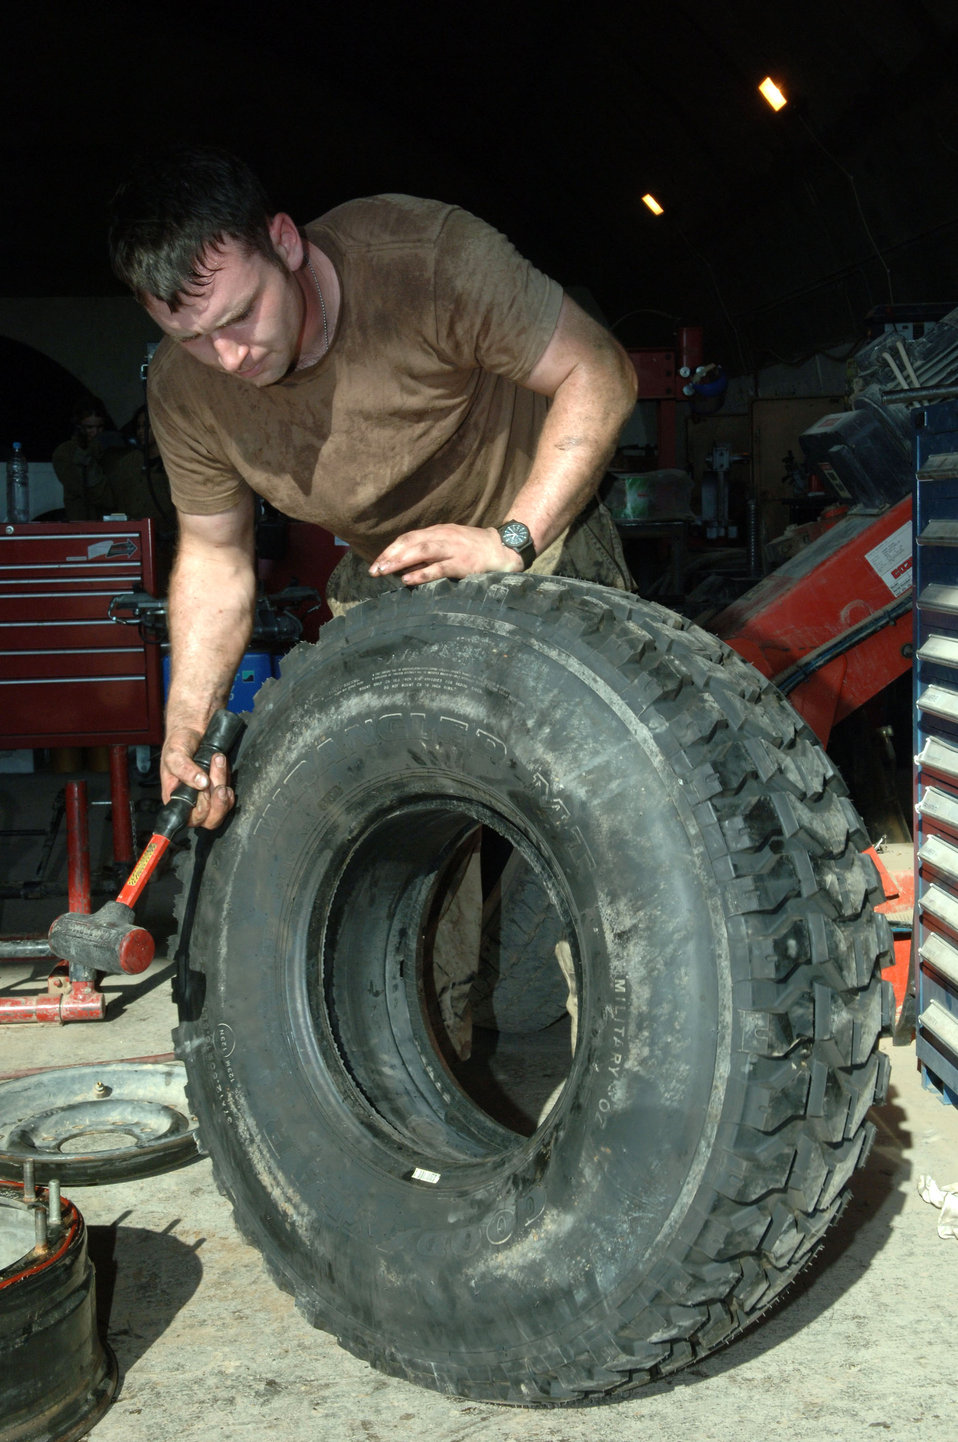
Balad vehicle maintenance

Senior Airman Richard Lober, 332nd Expeditionary Logistics Readiness Squadron, checks for wear and tear on a tire in the maintenance shop at Balad Air Base, Iraq. Airman Lober is a vehicle maintenance journeyman deployed from Royal Air Force Lakenheath, England.